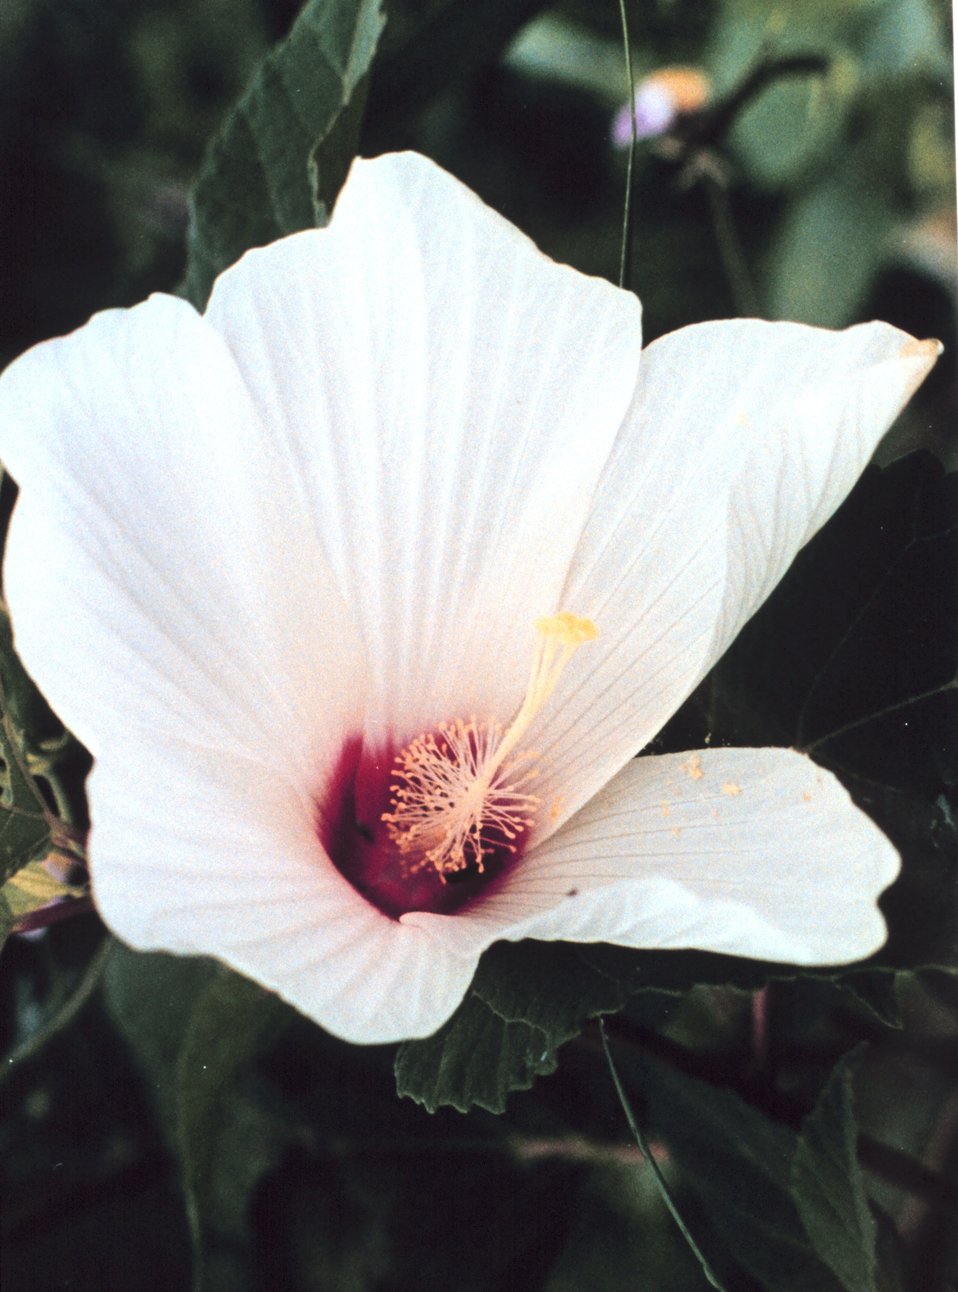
A white marsh hibiscus flower in bloom.